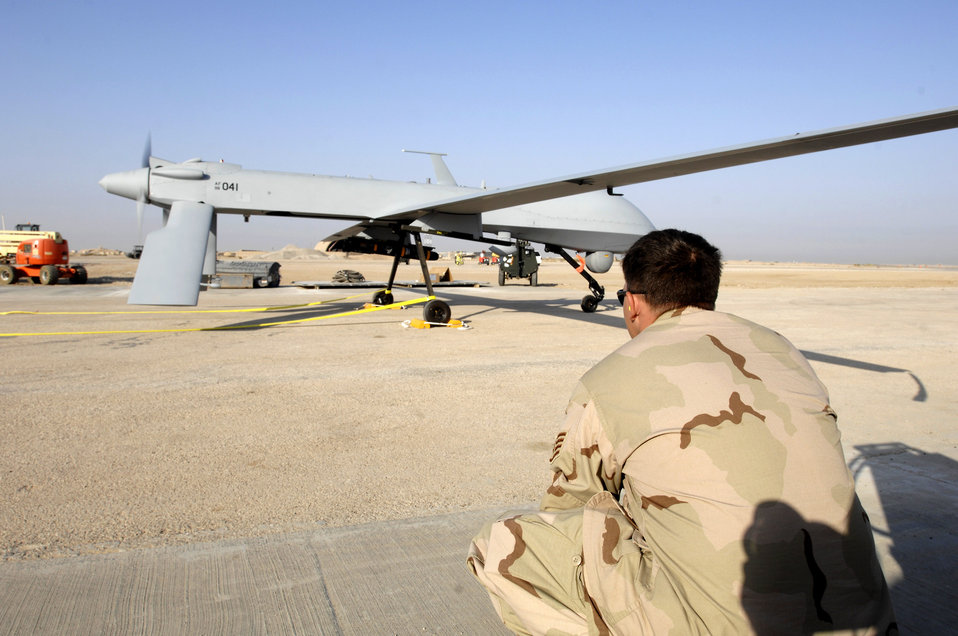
Predator test flight at Ali Air Base

Staff Sgt. Grant Crandel communicates with the pilot of an MQ-1 Predator Unmanned Aerial Vehicle while it is being prepared to launch for a test flight Oct. 25 to ensure equipment functionality and gain area familiarization at Ali Air Base, Iraq. Sergeant Crandel is deployed from Creech Air Force Base, Nev.